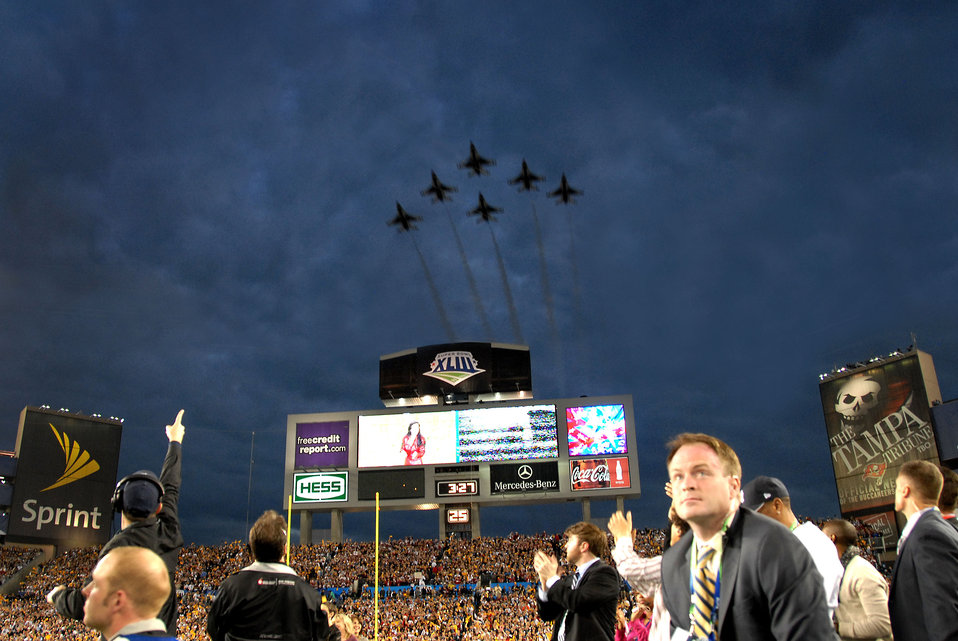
Thunderbirds perform Super Bowl flyover

The U.S. Air Force Thunderbirds perform a flyover during the singing of the National Anthem during Super Bowl XLIII Feb. 1, at Raymond James Stadium in Tampa, Fla.